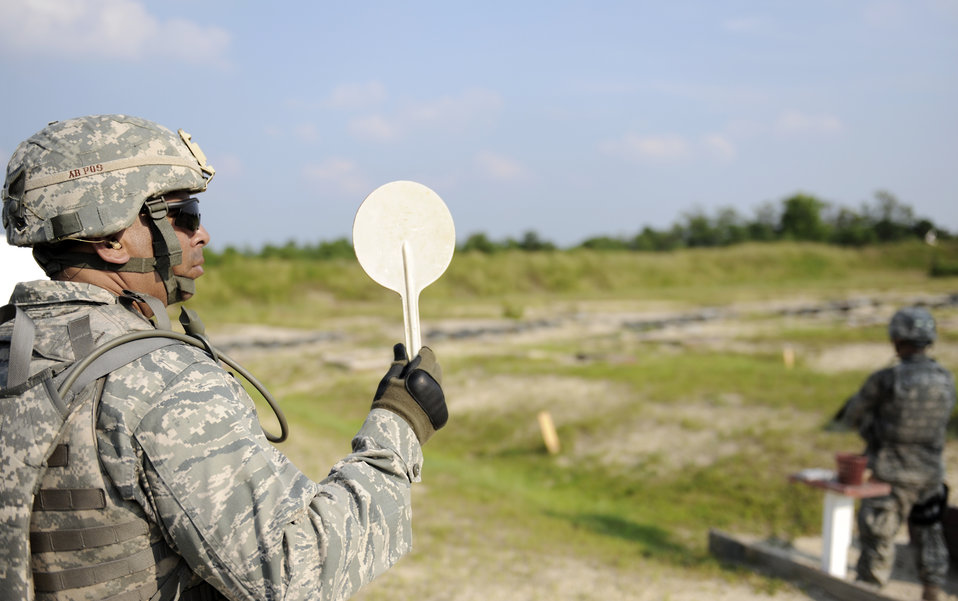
Airmen prepare for deployment

Capt. Edgar Lopez signals the control tower for clearance to fire during 9mm familiarization training Aug. 10 at Fort Dix, N.J. Captain Lopez is an installation anti-terrorism officer assigned to the 86th Airlift Wing at Ramstein Air Base, Germany.